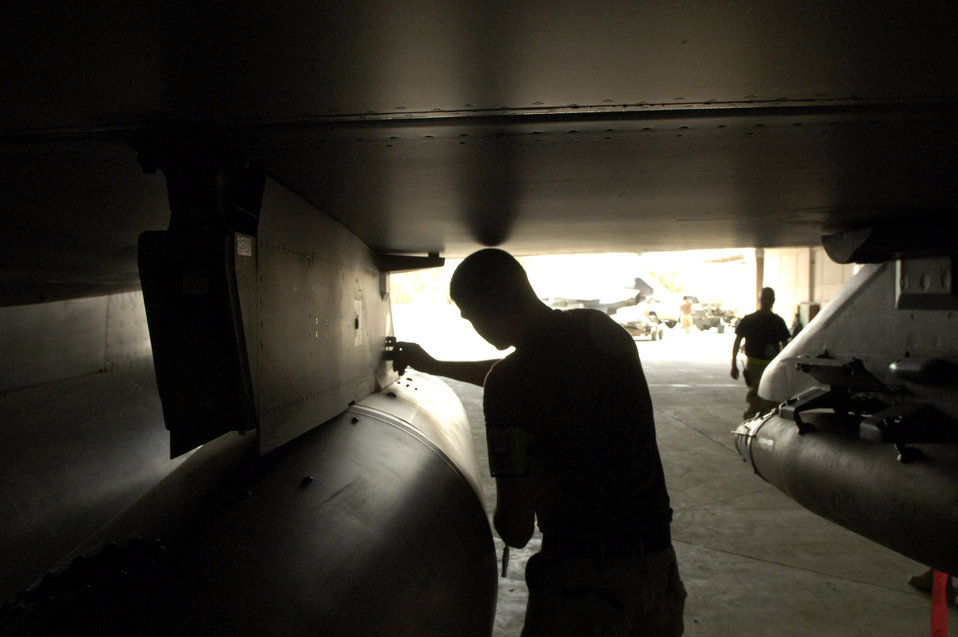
Falcon gets downloaded

Senior Airman Mark Grabner, a weapons load crew member for the 332nd Expeditionary Aircraft Maintenance Squadron at Balad Air Base, Iraq, removes an impulse charge from the wing pylon holding the external fuel tank on an F-16 Fighting Falcon. The impulse charge, when activated, is used to jettison the external fuel tank.